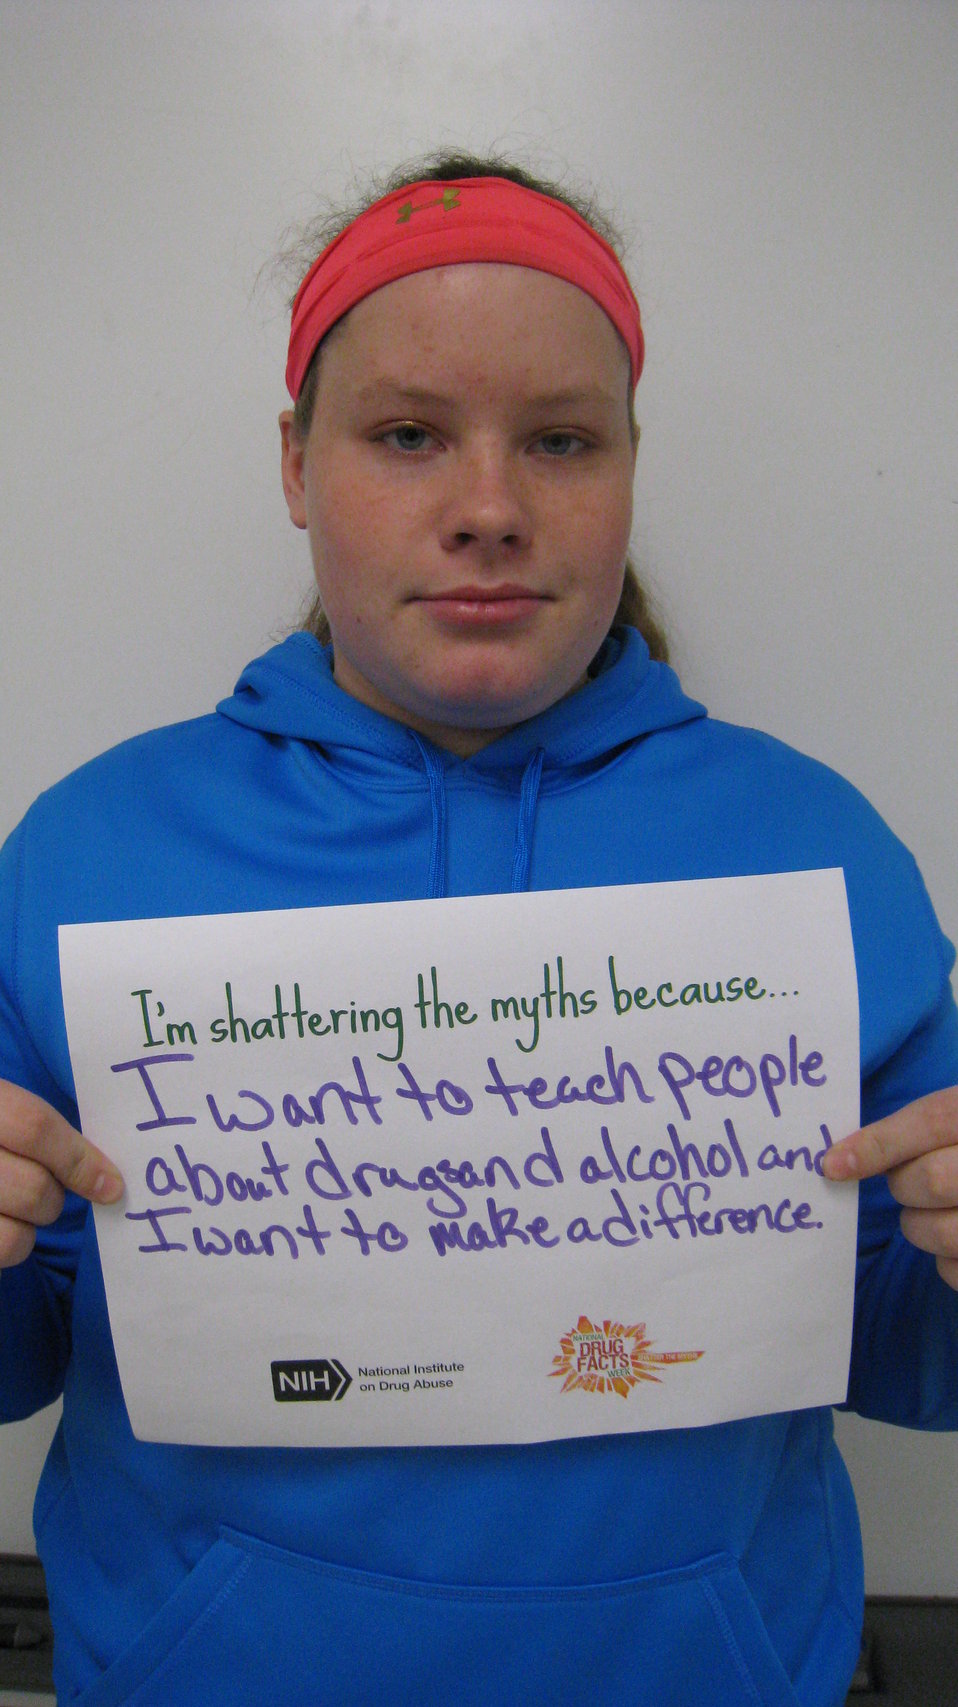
I'm Shattering the Myths Because...

Teenagers from the Van Buren County SAFE Coalition's, Youth Leadership Council (YLC) in Keosauqua, Iowa participate in various events during National Drug Facts Week, 2014.